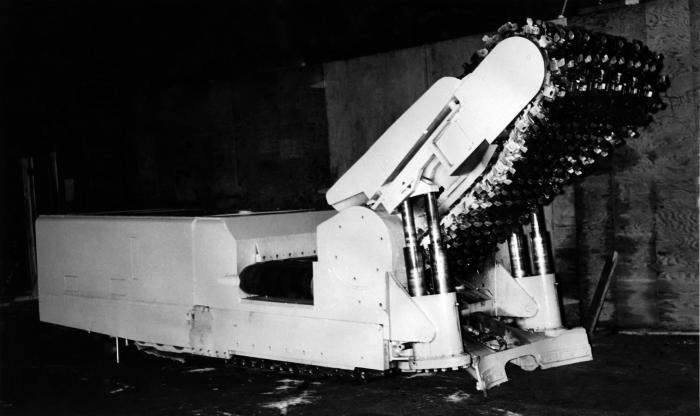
This historic image photographed in New Glascow, Nova Scotia, provided by the Center for Disease Control's (CDC), National Institute for Occupational Safety and Health (NIOSH), depicted a Dominion Steel and Coal Corporation (Dosco) Miner, a continuous mining machine. Operating with 200-hp, this machine was equipped with seven cutter chains, which are moved in a radial fashion in order to strip coal from mine shaft walls and ceiling. This machine could dig and load approximately 500 tons of coal per day.